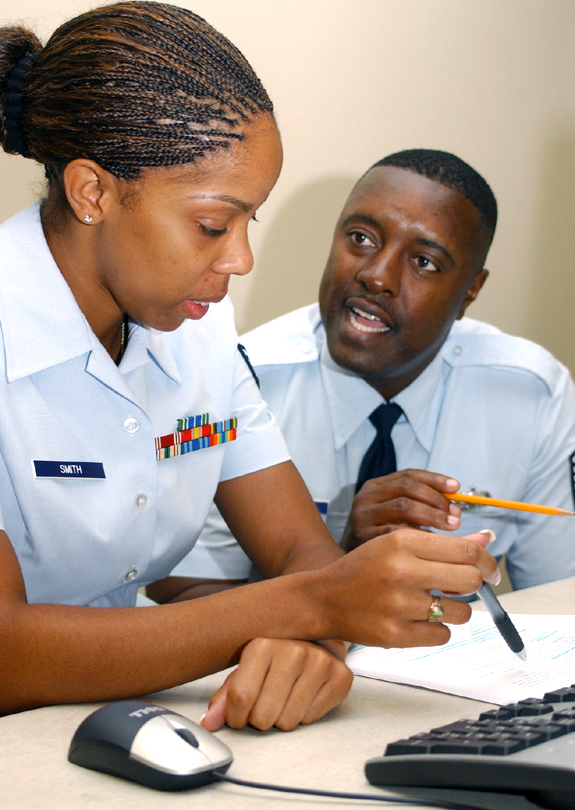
Tenacious trainers triumph in Katrina's wake

Senior Airman Lesley Smith and her instructor, Master Sgt. John Cook, recently review course information at Keesler Air Force Base, Miss. Airman Smith, an information management student in the 336th Training Squadron, is from Selfridge Air National Guard Base, Mich. She returned to Keesler Aug. 21 and is the last pre-Katrina initial-skills student to resume training.